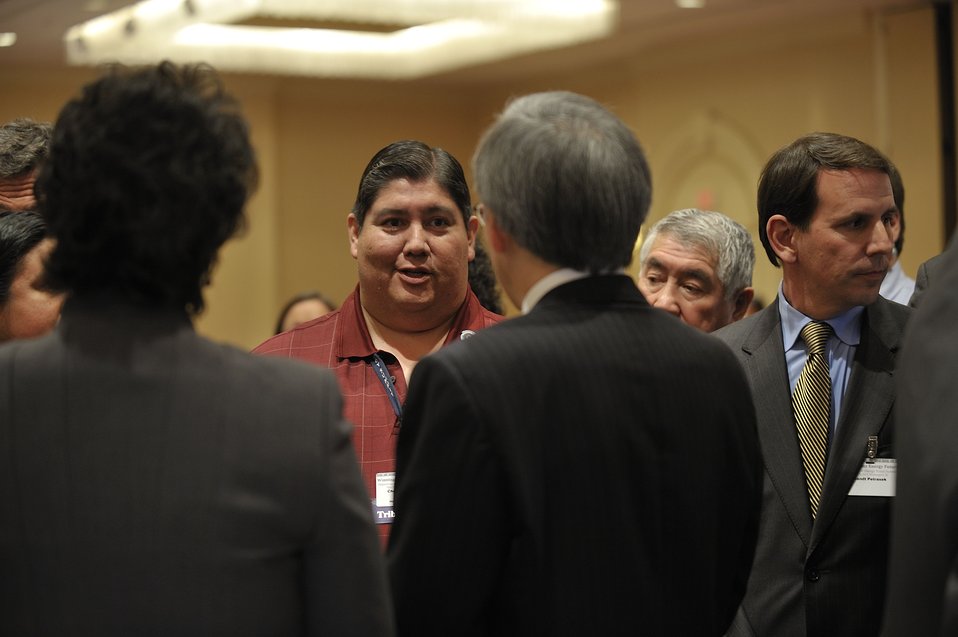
Tribal Energy Summit